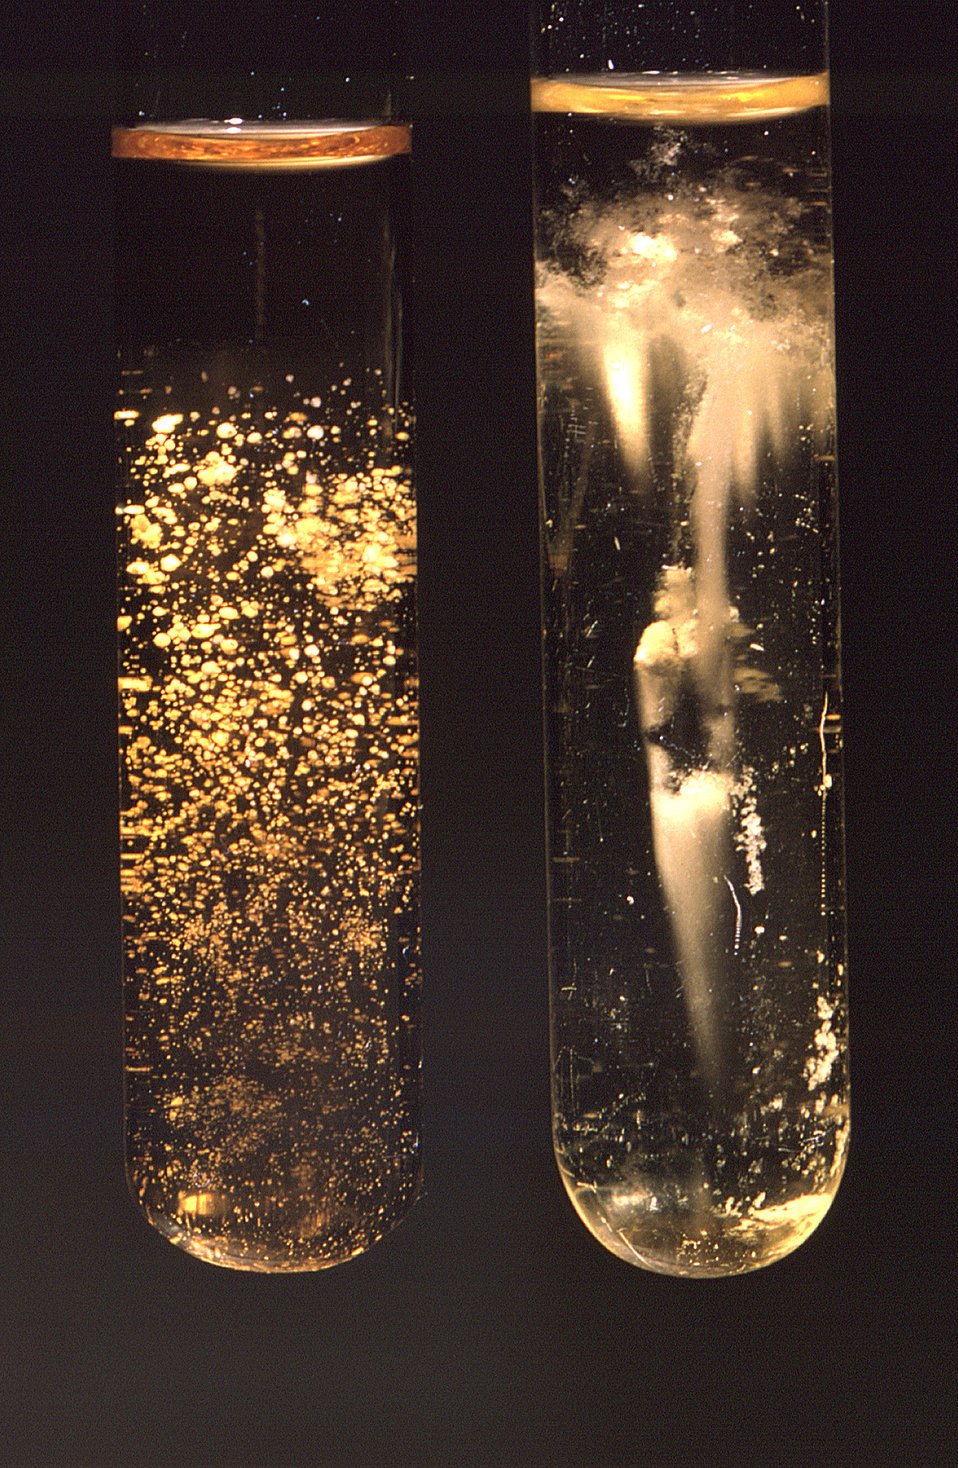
These two test tubes contain thioglycollate broth, which had been used to culture two different strains of Gram-positive Actinomyces sp. bacteria. The tube on the left grew organisms that produced a rough, or granular growth pattern, while the tube on the right produced organisms that manifested a smooth or diffuse growth pattern.